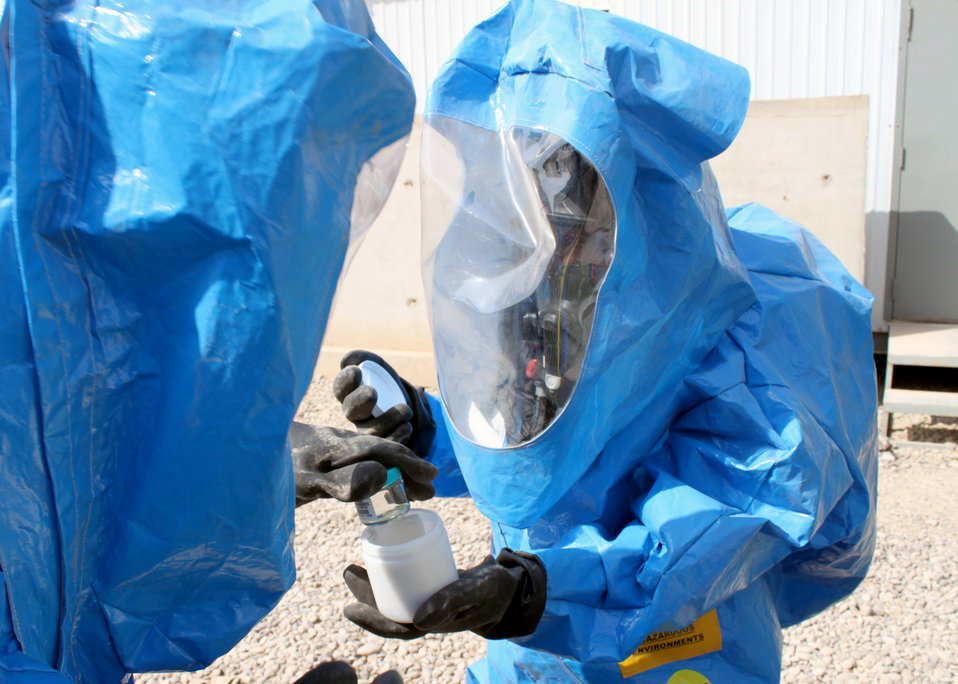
Emergency management

Senior Airmen Nathan Krajcirik (left) and Nadege James place a sample of an